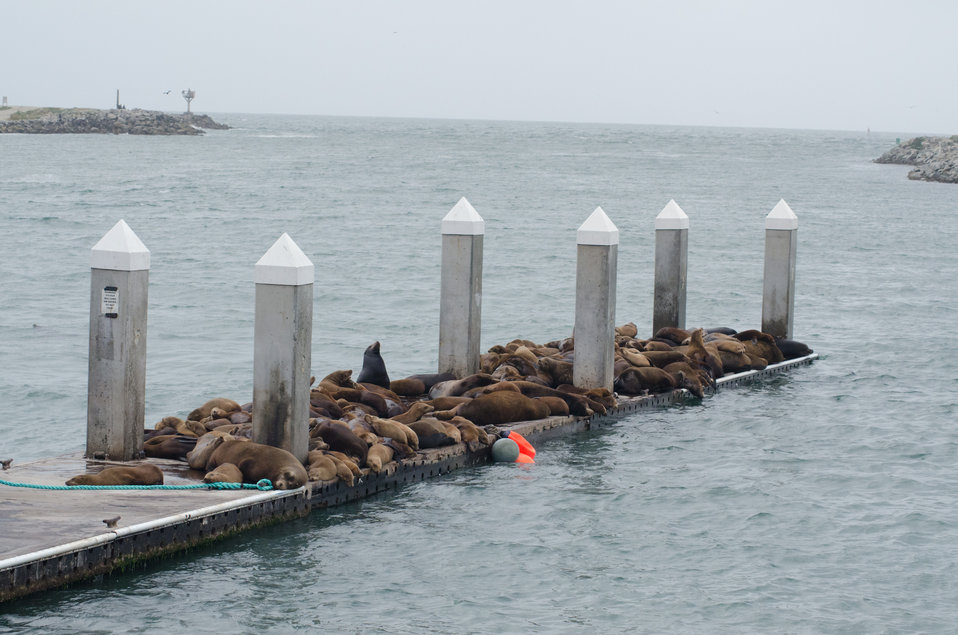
Sea lions and harbor seals rest on a visitor’s pier at Moss Landing, CA., on Thursday, June 16, 2011. Clarity of the water below them is related to the amount of silt and sediment, above natural levels, that flows into the Monterey Bay National Marine Sanctuary in the coastal waters of California.